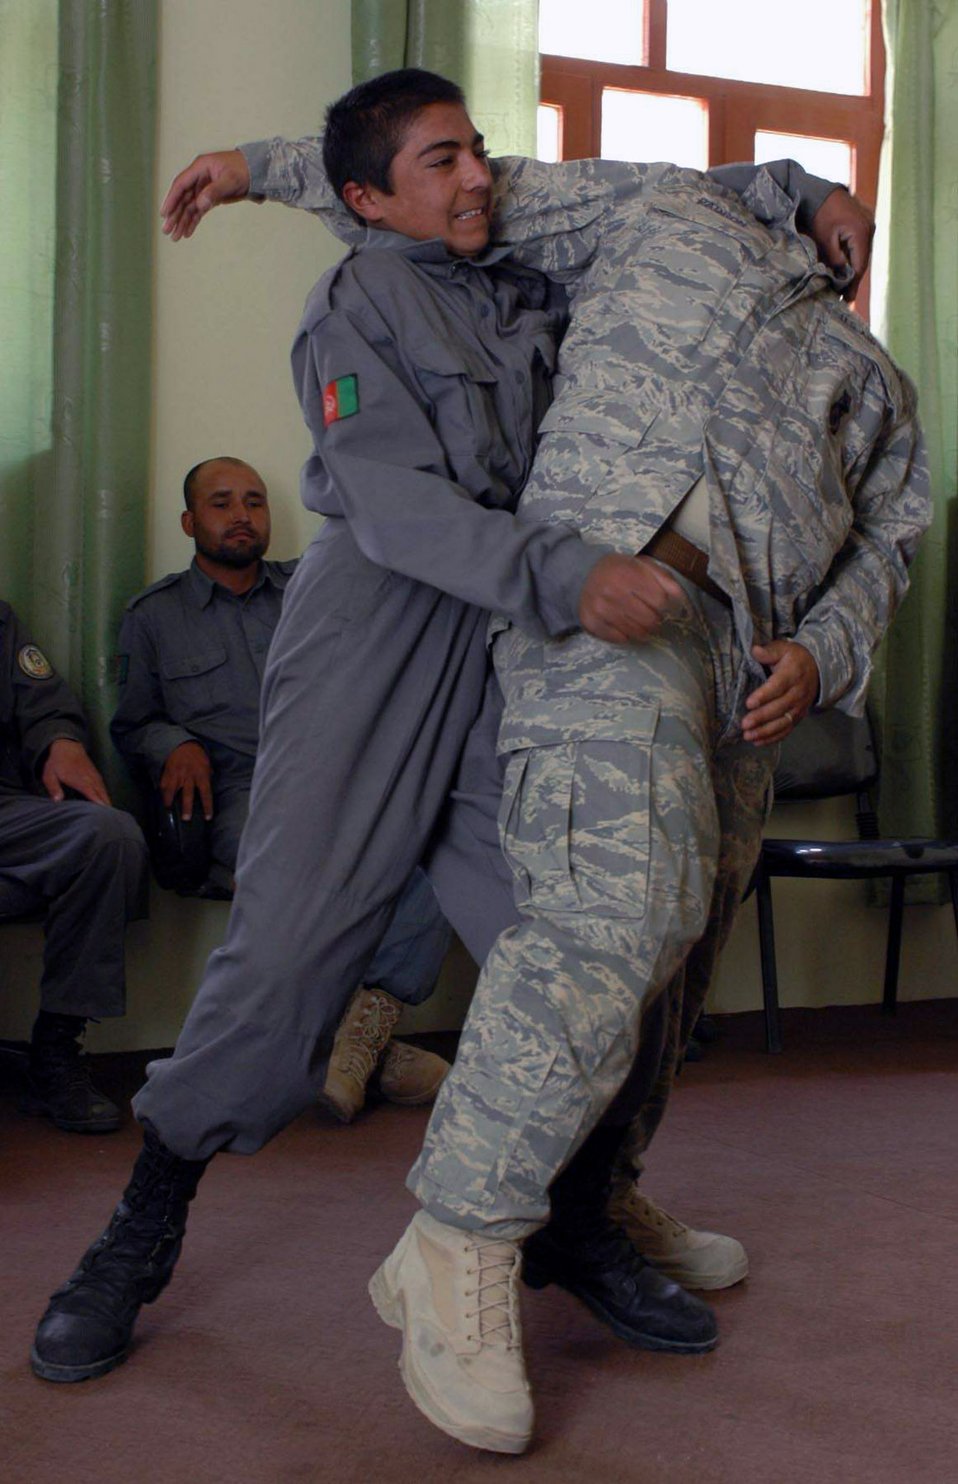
Airmen help Afgahnistan National Police hone skills

An Afghanistan National Police officer executes a restraint technique on Tech. Sgt. Chris Padron May 8 at Dandar village in the Parwan province of Afghanistan. Sergeant Padron and a team of Soldiers and Airmen taught the class as a refresher for the ANP for training they received at their academy. Sergeant Padron is a Provincial Reconstruction Team member deployed from Cannon Air Force Base, N.M.